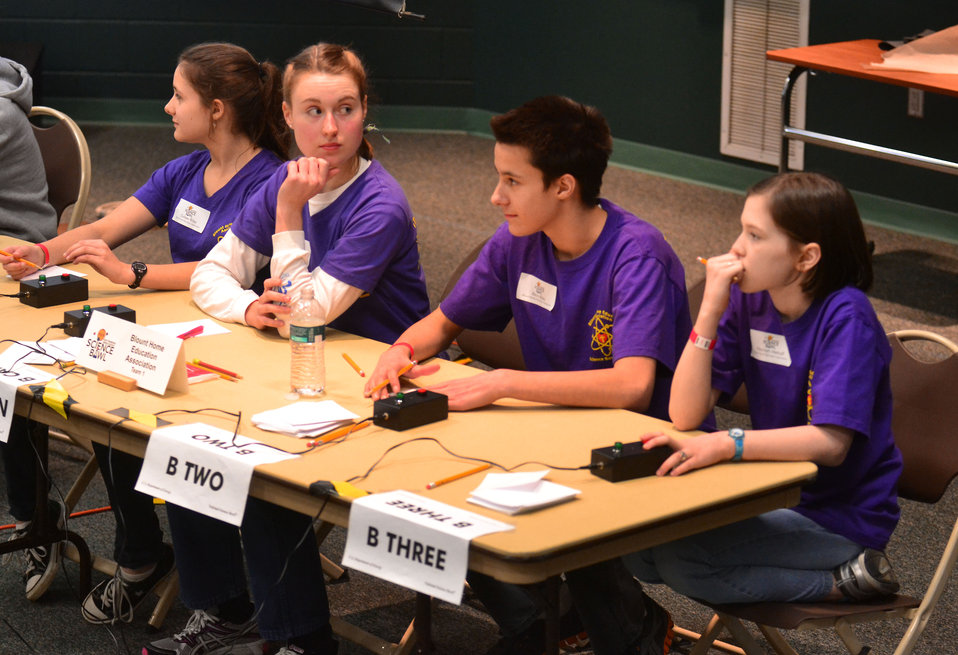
Blount Home Educational Association First Place DOE Tennessee Middle School Science Bowl Oak Ridge

13-008 DOE photo Lynn Freeny DOE Tennessee Middle School Scence Bowl 2-2-2013 Oak Ridge Tennessee